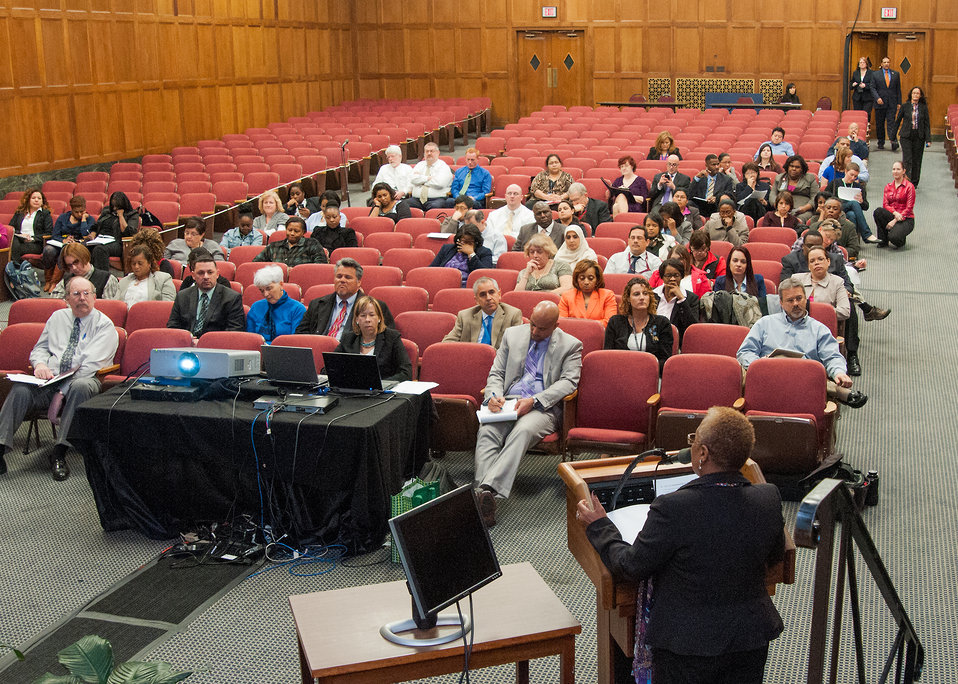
U.S. Department of Agriculture (USDA) Office of the Assistant Secretary for Civil Rights, Compliance Division Chief Geraldine Herring discusses the role of the Office of Civil Rights at the First Annual All Hands Special Emphasis Program Managers (SEPM) Meeting at the U.S. Department of Agriculture Jefferson Auditorium in Washington, D.C. on Wednesday, Mar. 13, 2013.